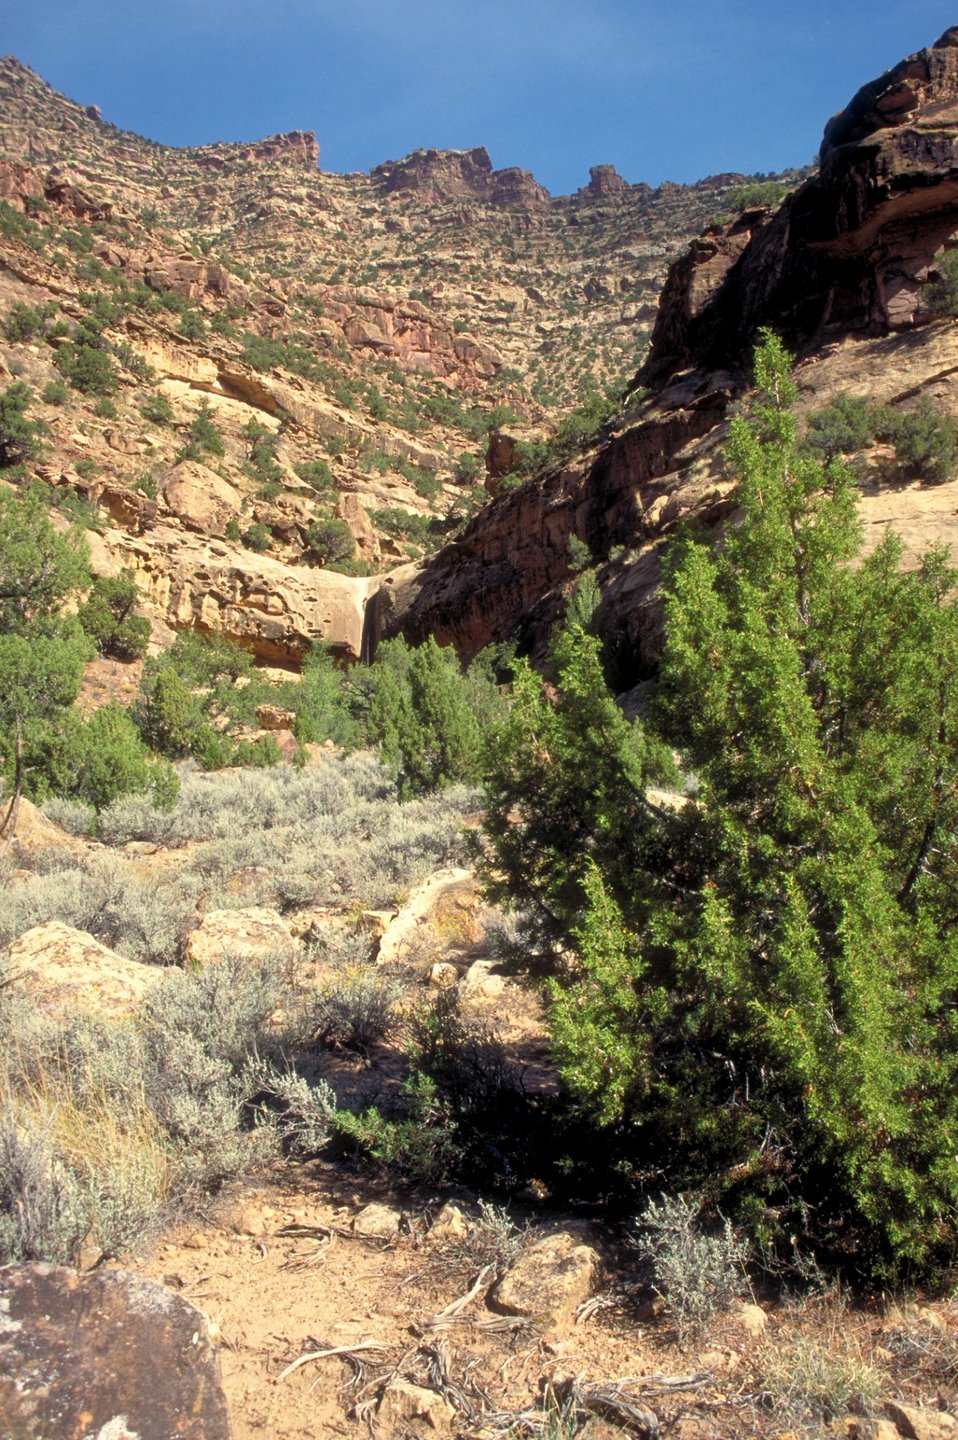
Desolation/Gray Canyons near Price, Utah.